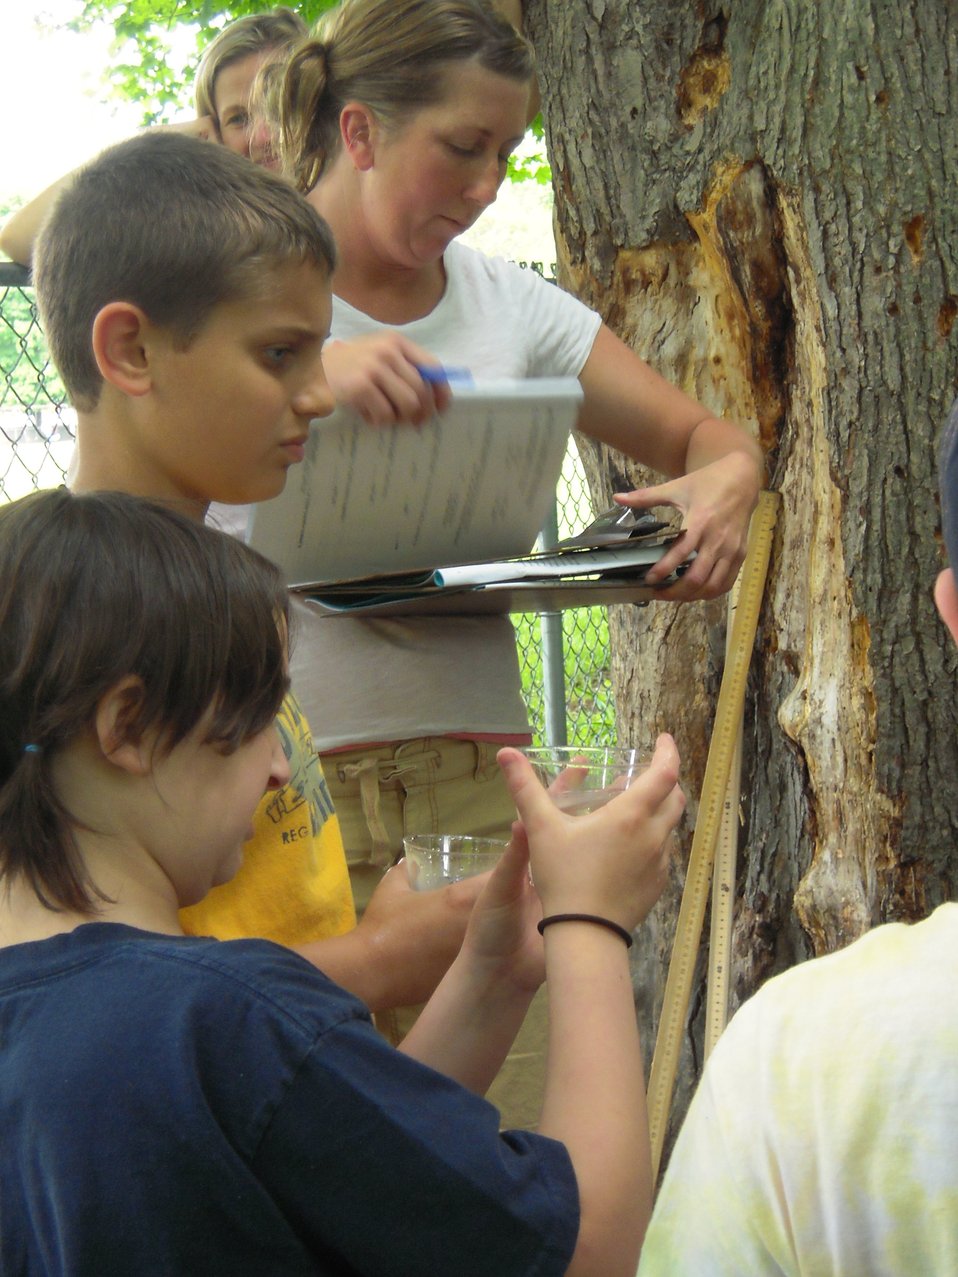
Testing water samples from stream